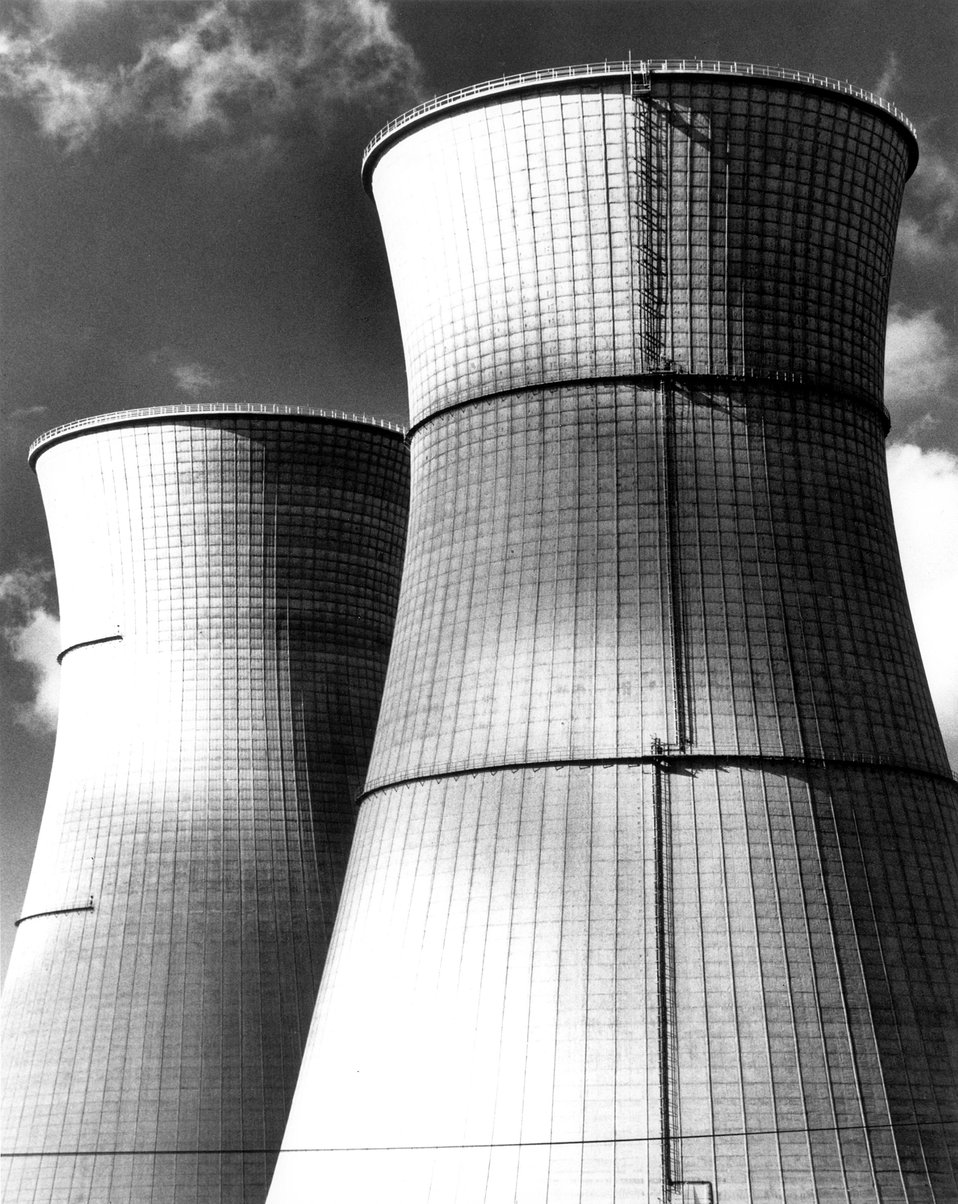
These two 43 story tall natural draft evaporation towers at Ranco Seco Nuclear Generating Station will dissipate waste heat by recycling the turbine condenser cooling water at the rate of a half a million gallons per minute. Circa 1974.